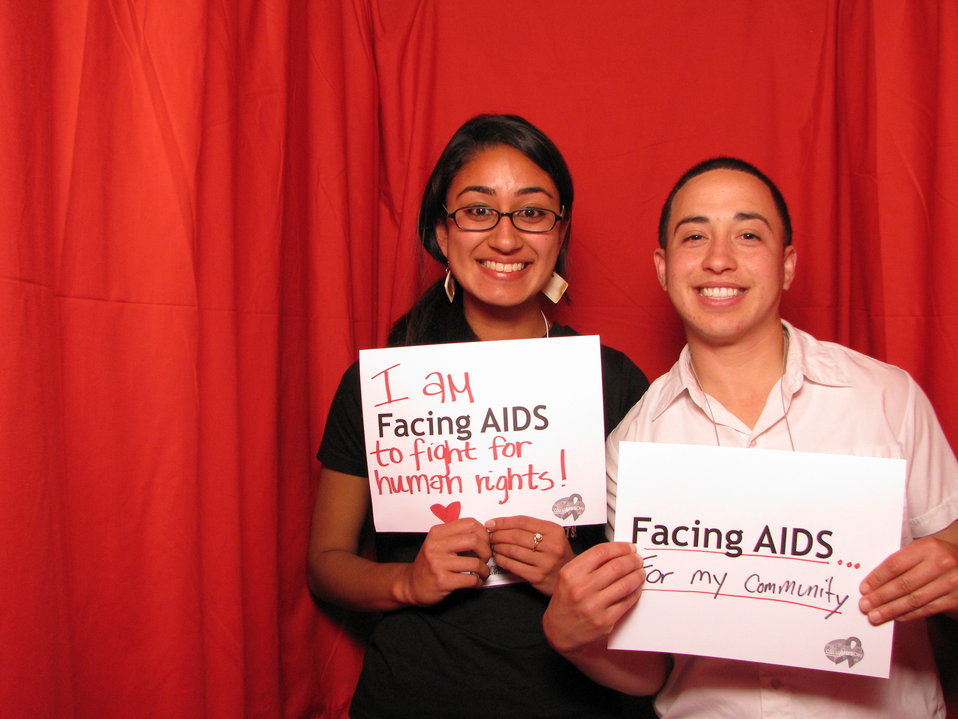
I am FACING AIDS to fight for human rights! FACING AIDS... for my community.

From the AIDS.gov photo booth at the U.S. Conference on AIDS, September 2010 (Orlando, FL).